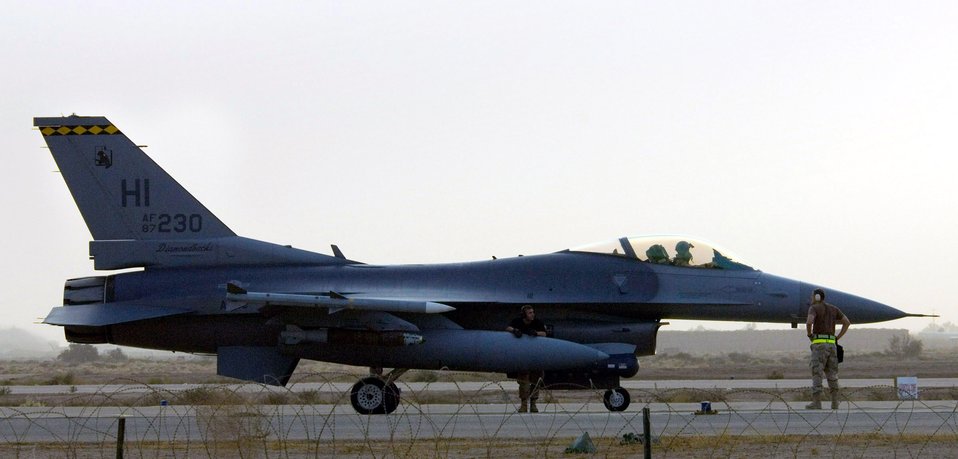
Operation Iraqi Freedom

BALAD AIR BASE, Iraq (AFPN) -- An F-16 Fighting Falcon awaits takeoff here. The aircraft is currently supporting Operation Iraqi Freedom. The F-16 Fighting Falcon is a compact, multi-role fighter aircraft. It is highly maneuverable and has proven itself in air-to-air combat and air-to-surface attack. It provides a relatively low-cost, high-performance weapon system for the United States and allied nations.